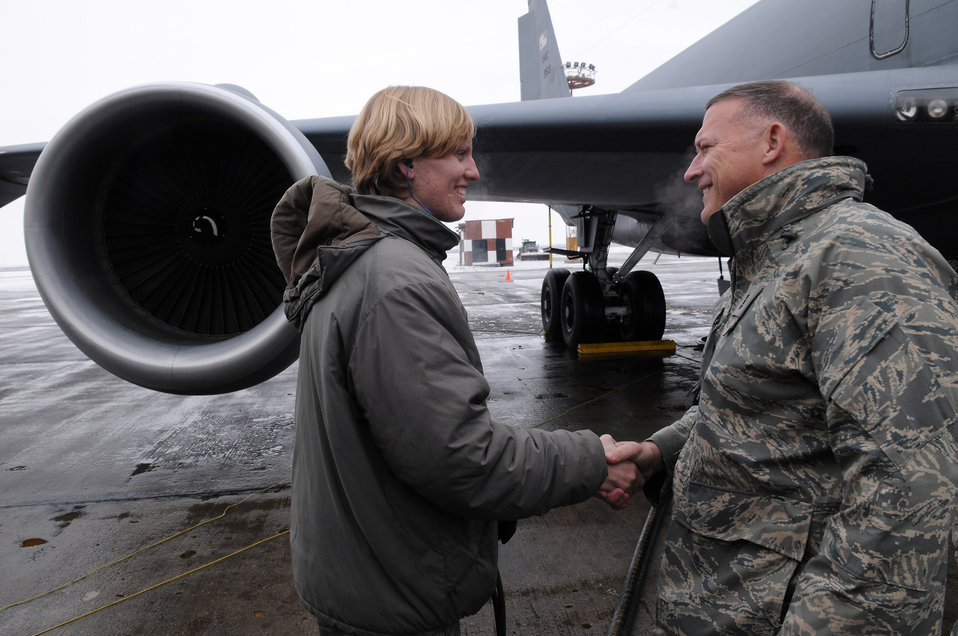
Filler' up--with two million gallons of premium

Senior Airman Victoria Drefs shakes hands with Lt. Gen. Gary North, U.S. Air Forces Central commander, as she is about to reach the two million gallon mark for fuel delivered during her deployment. Airman Drefs is a fuels specialist with the 376th Air Expeditionary Wing at Manas Air Base, Kyrgyzstan.